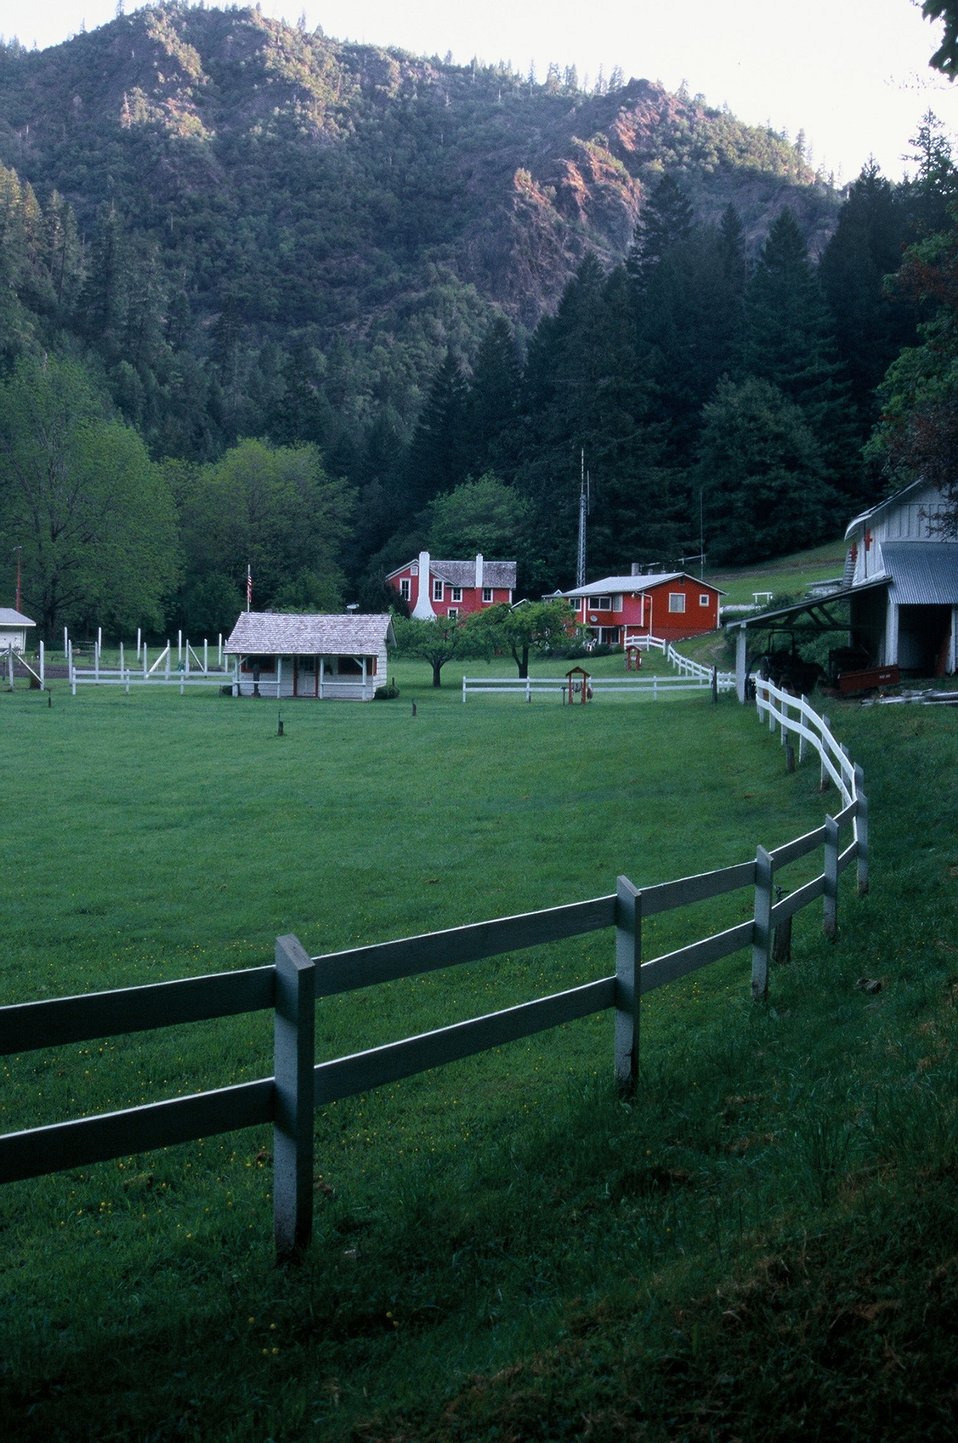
Wild section of the Rogue River from Grave Creek to Foster Bar May 19 to May 22.